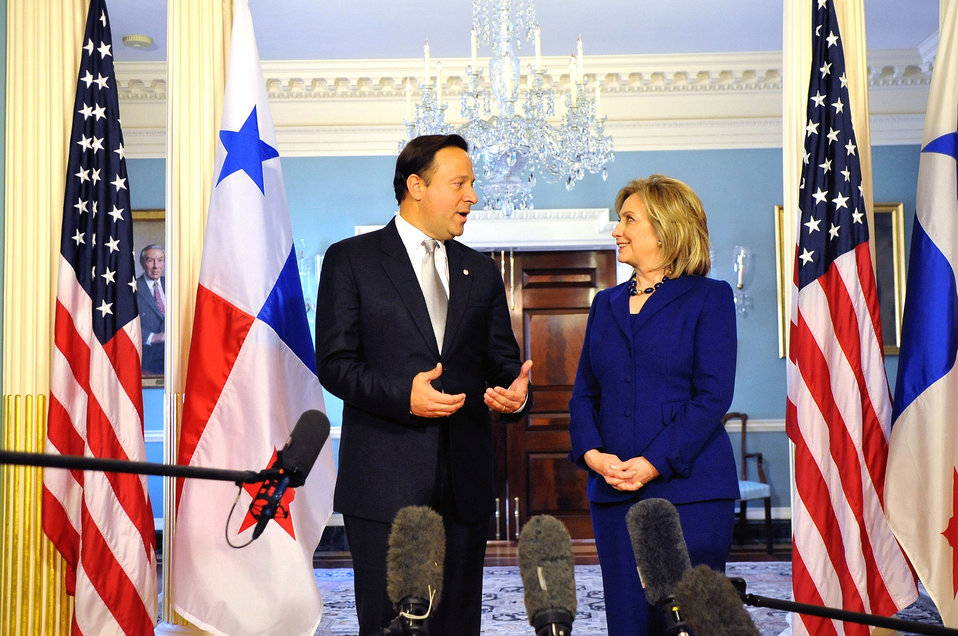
Secretary Clinton Speaks With Panamanian Vice President and Foreign Minister Varela

U.S. Secretary of State Hillary Rodham Clinton speaks with Panamanian Vice President and Foreign Minister Juan Carlos Varela before their bilateral meeting at the U.S. Department of State in Washington, D.C., on February 10, 2011.